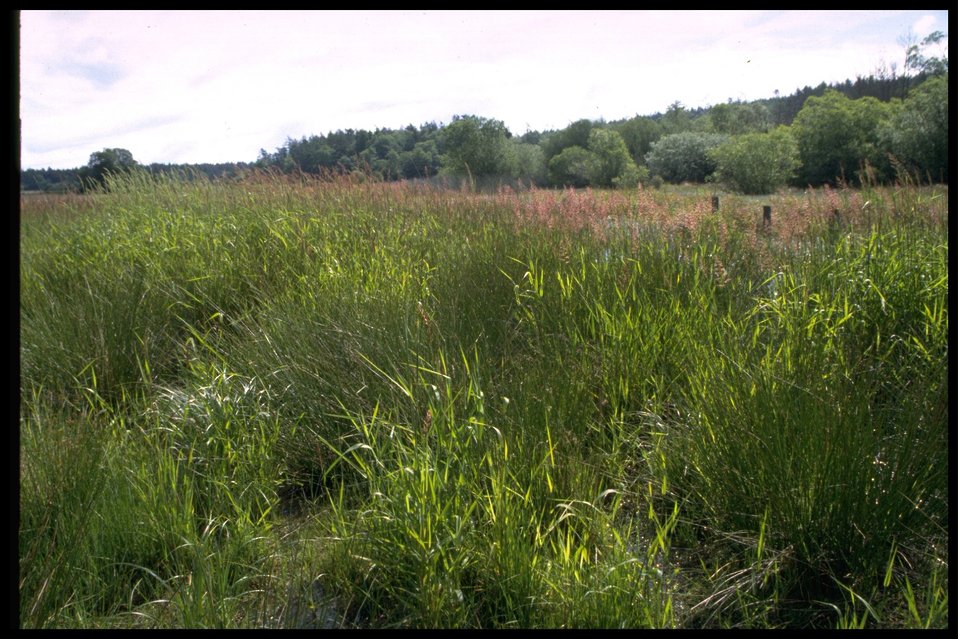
Chadwick Hill Marsh.